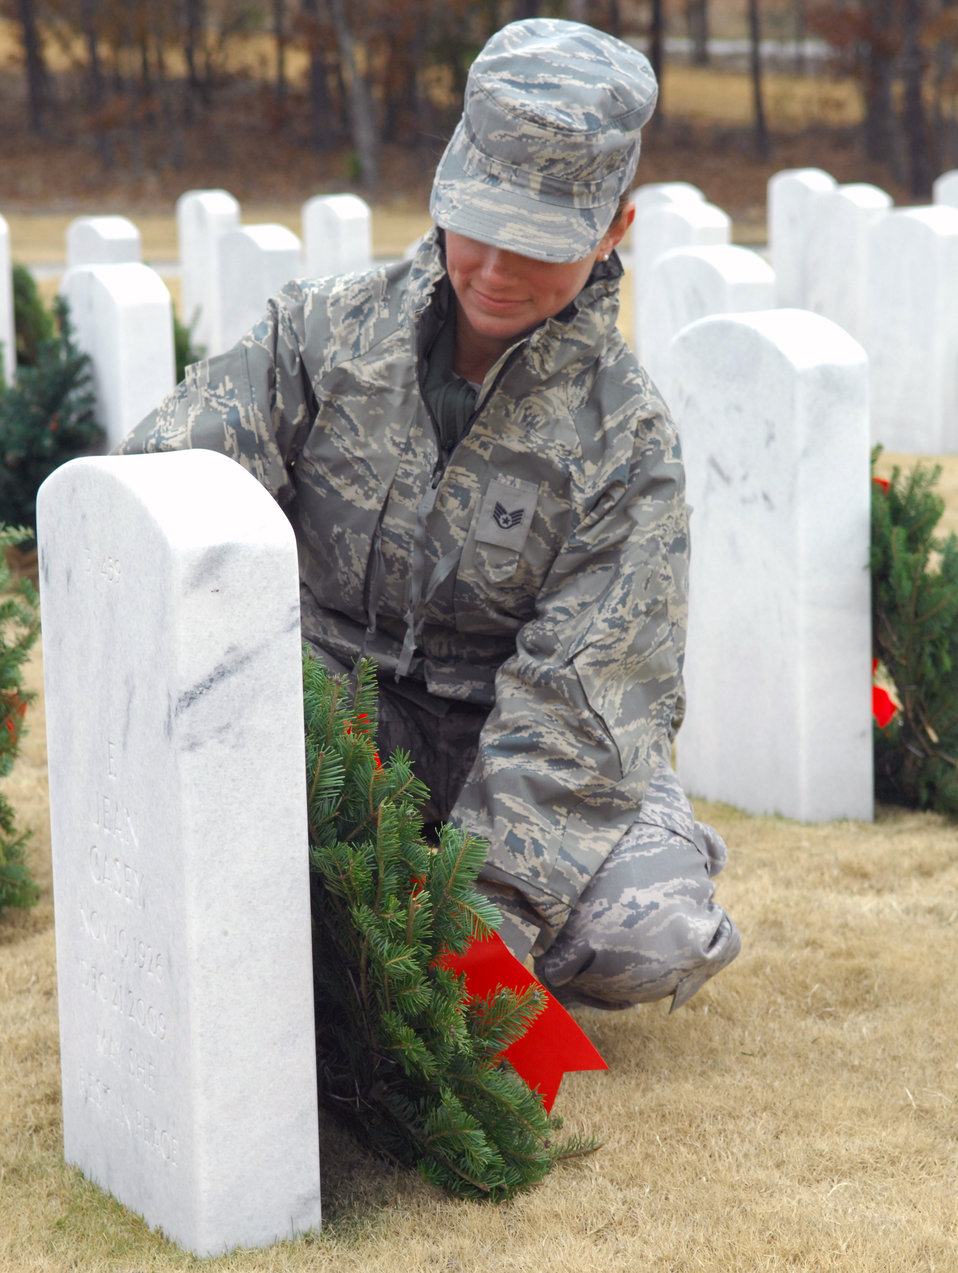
Wreaths Across America

Staff Sgt. Amanda Payne lays a wreath on the tombstone of a fallen veteran during the Wreaths Across America ceremony Dec. 11, 2010, at Fort Jackson National Cemetery in Columbia, S.C. The ceremony was held to remember our veterans who have passed. Sergeant Payne is the command chief's assistant with the 20th Fighter Wing.